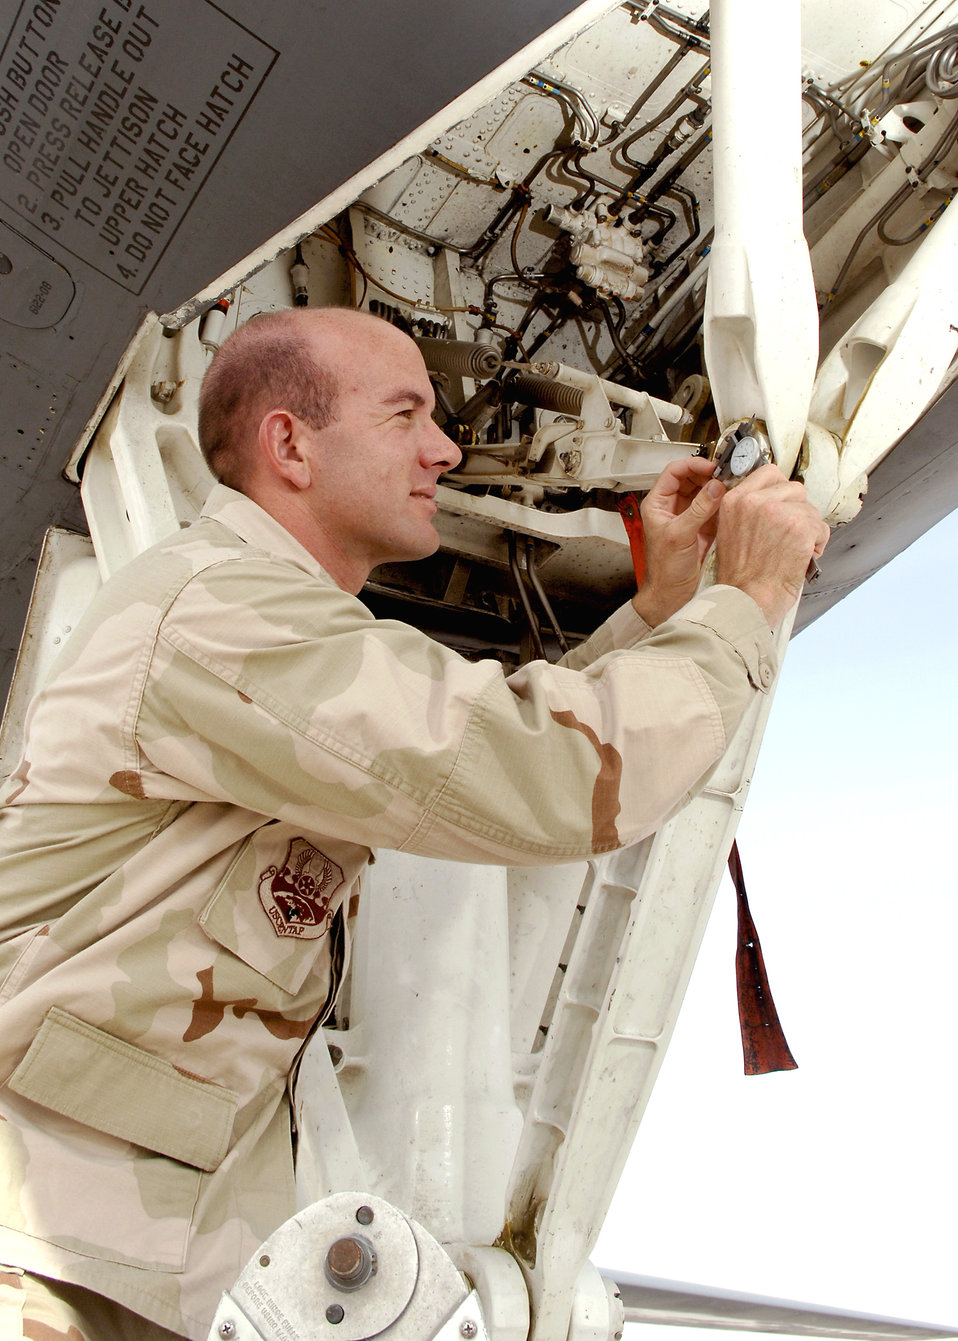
Depot liaison engineers support aircraft maintenance units

Second Lt. Mark Eilertsen, a depot liaison engineer with the 379th Expeditionary Maintenance Operations Squadron, uses a dial caliper while inspecting the nose landing gear of a B-1 Lancer.